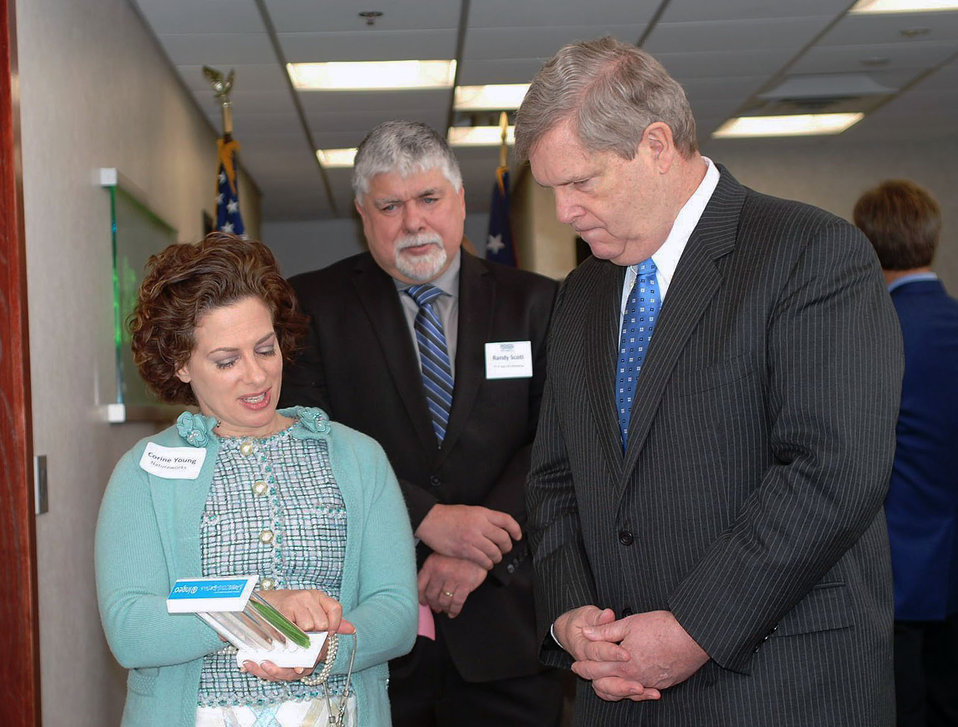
Corinne Young shows Agriculture Secretary Tom Vilsack NatureWorks, LLC’s process for converting corn to a plastic film bioproduct at Plastic Suppliers Inc. in Columbus, OH on Friday, Jan. 31, 2014. Looking on is Plastic Suppliers’ Vice President of Sales (Americas) Randy Scott.